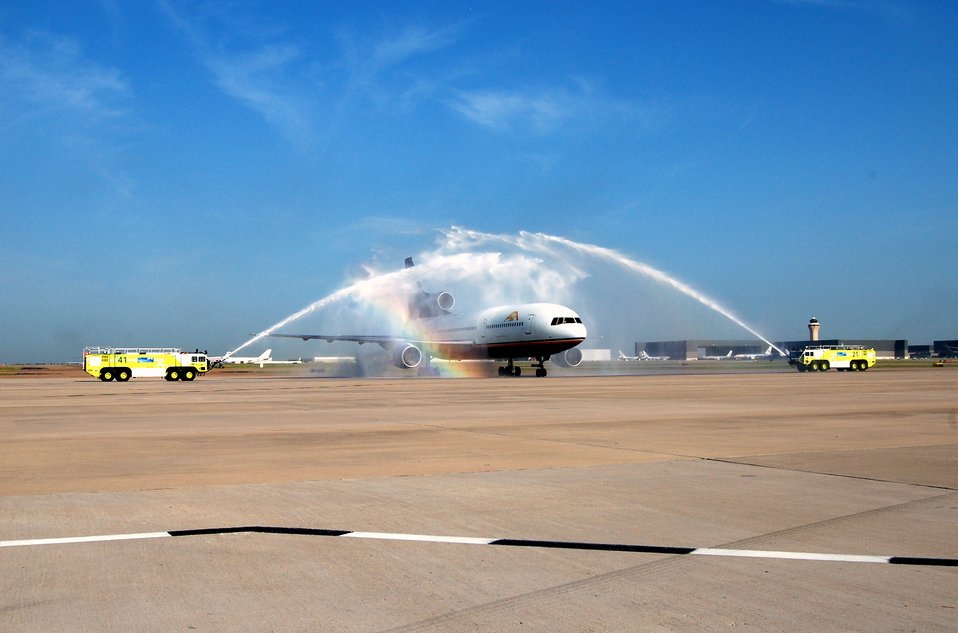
Air Mobility Command reaches milestone in 'R and R' flight ops

An L-1011 passenger jet carrying U.S. servicemembers and Department of Defense civilians home from Southwest Asia receives a